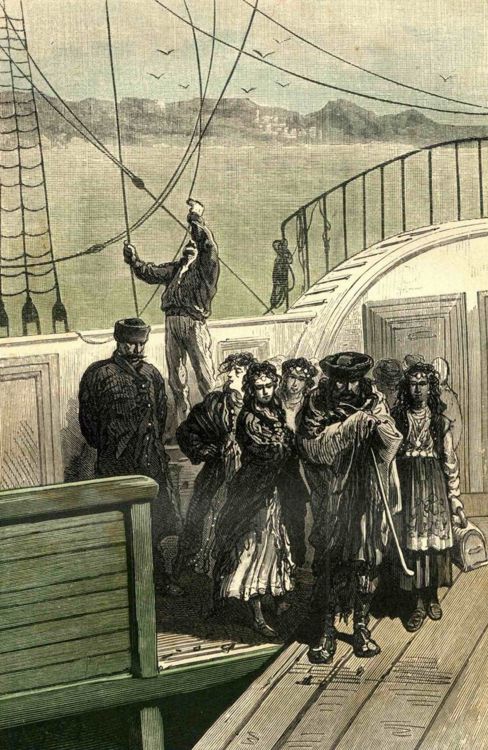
An illustration from the novel 'Michael Strogoff: The Courier of the Czar' by Jules Verne drawn by Jules F√©rat. Polski: Ilustracja powie≈õci Juliusza Verne'a 'Micha≈Ç Strogow, kurier carski' autorstwa Julesa F√©rata. Fran√ßais†: 'Michel Strogoff. Le courier du tzar', Jules F√©rat. Fran√ßais†: Au moment o√π la troupe boh√©mienne‚Ä¶